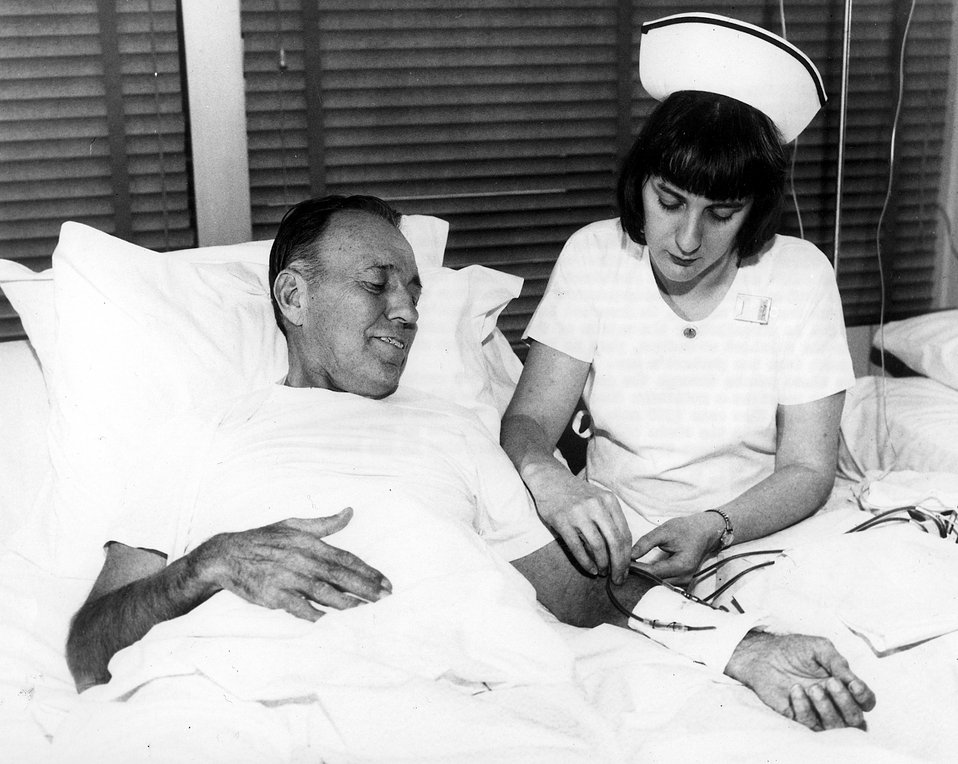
A patient is undergoing treatment for leukemia by expracorpereal irradiation of his blood. The nurse is about to connect the arteriovenenous shunt in the patient's forearm to the tubing leading into a shielded container where the gamma ray source is located.
c.1966